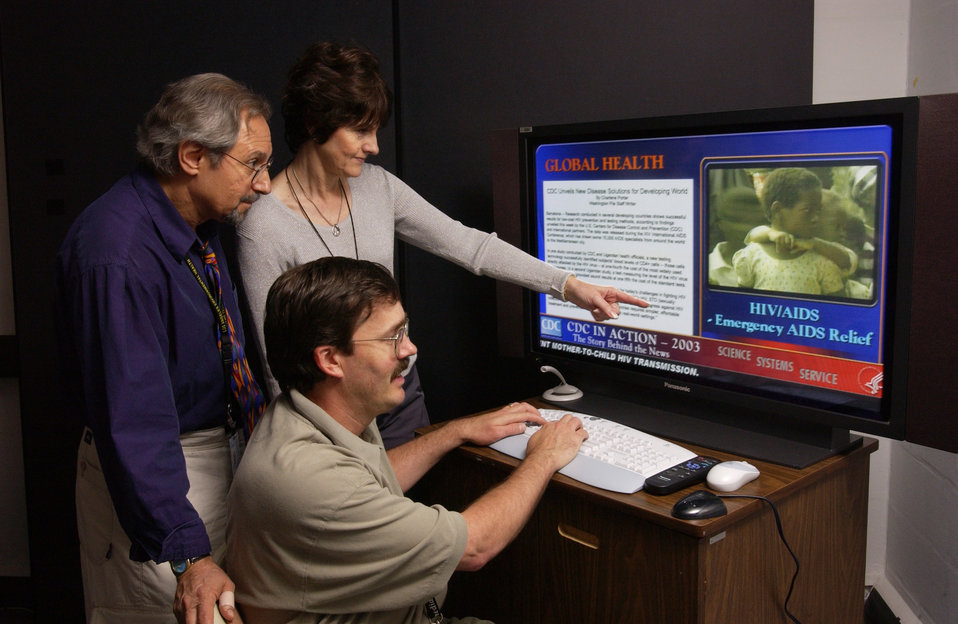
Here, PHPPO/DPDE designer Nick Degner (seated), along with Lou Boviero and Jo Ann Bittle, are reviewing APHA project graphics.